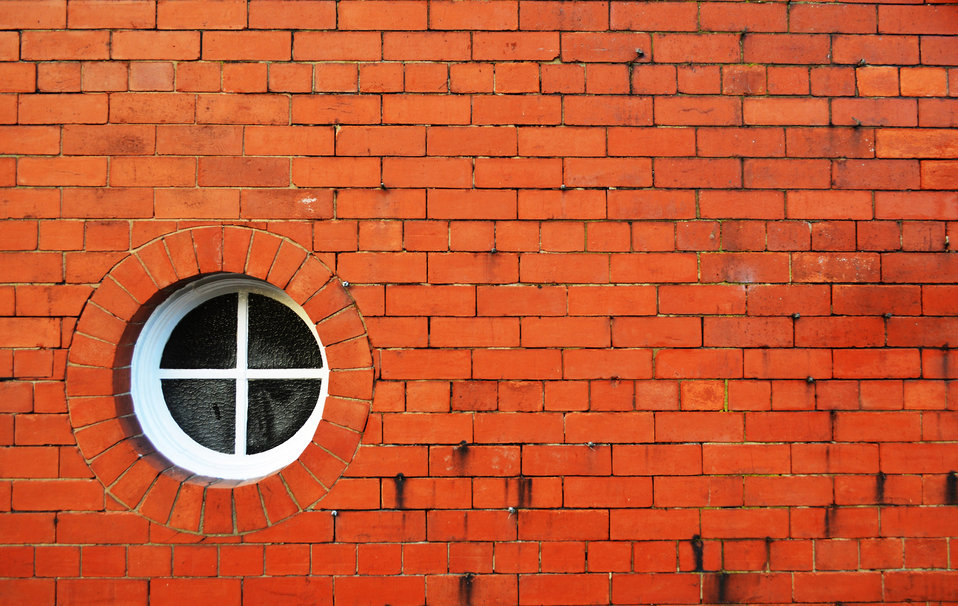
Brick wall and window.